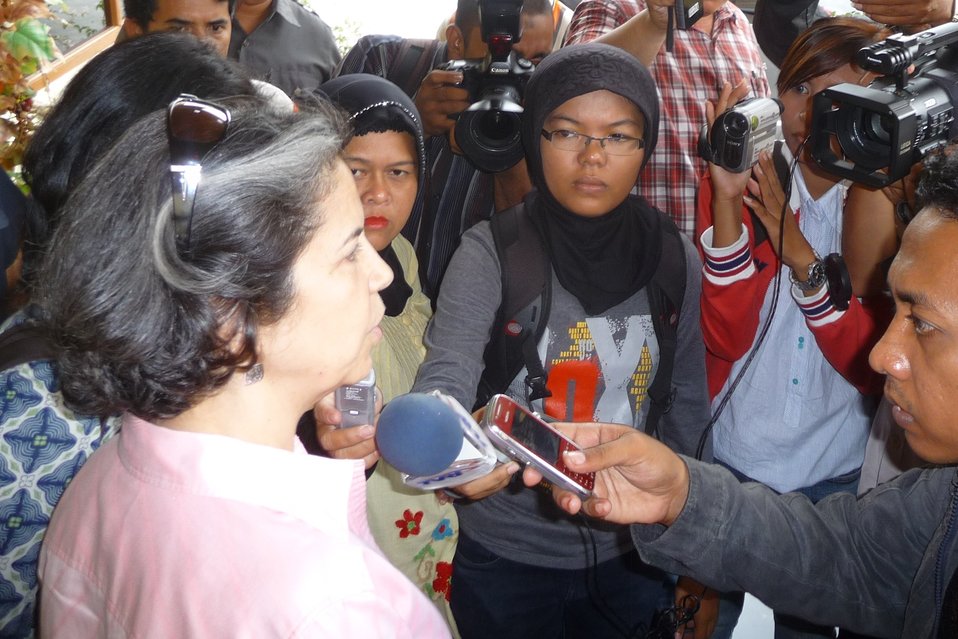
Under Secretary Otero Speaks With Journalists

Under Secretary for Democracy and Global Affairs Maria Otero speaks with journalists in Pekanbaru, Indonesia, May 19, 2010.